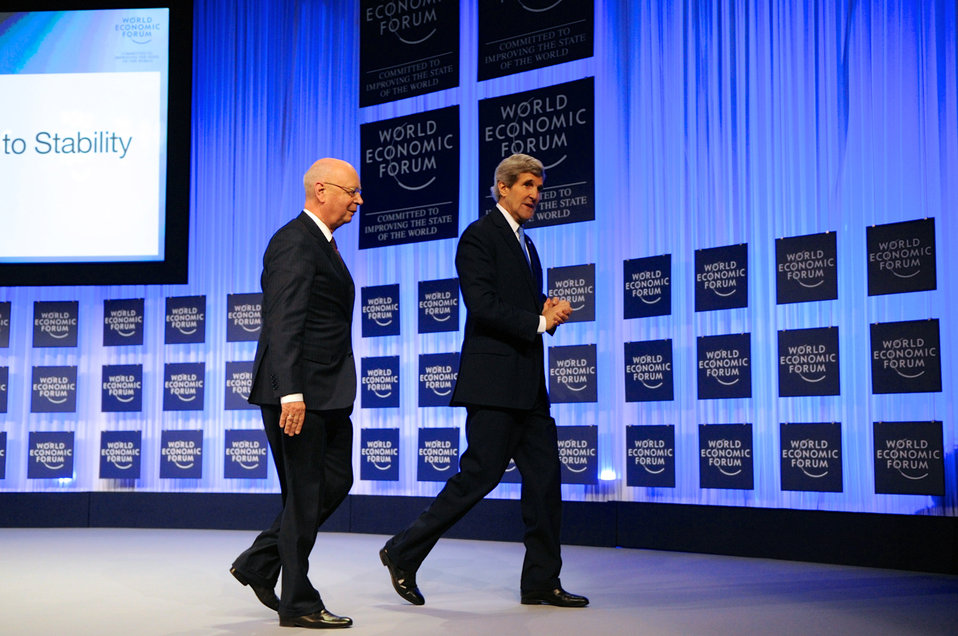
Secretary Kerry Walks Off Stage After Concluding Speech to World Economic Forum

U.S. Secretary of State John Kerry, escorted by Founder Klaus Schaub, walks off stage after delivering the keynote address at the World Economic Forum in Davos, Switzerland, on January 24, 2014.